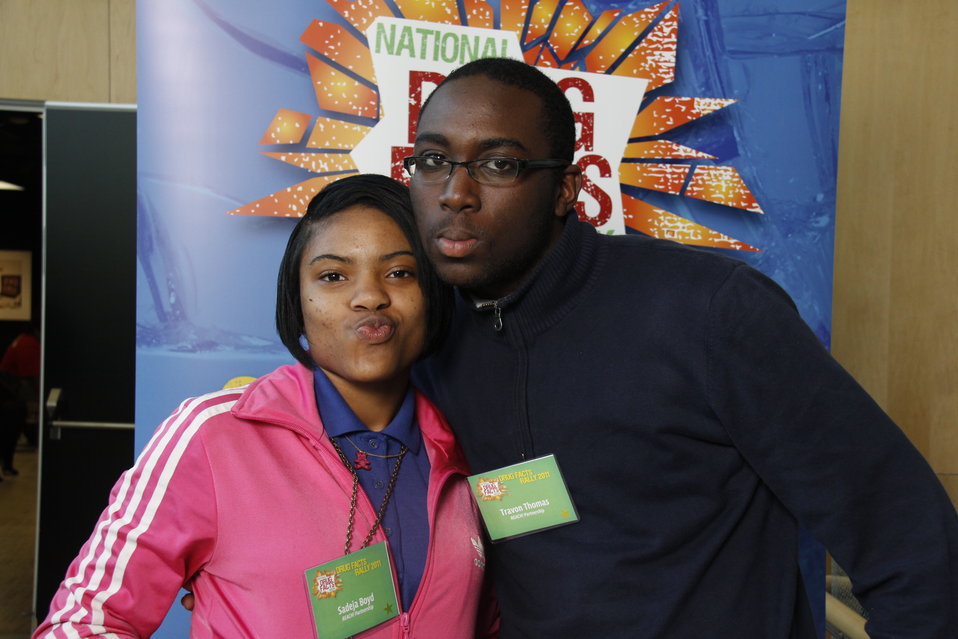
NDFW Mentor Event